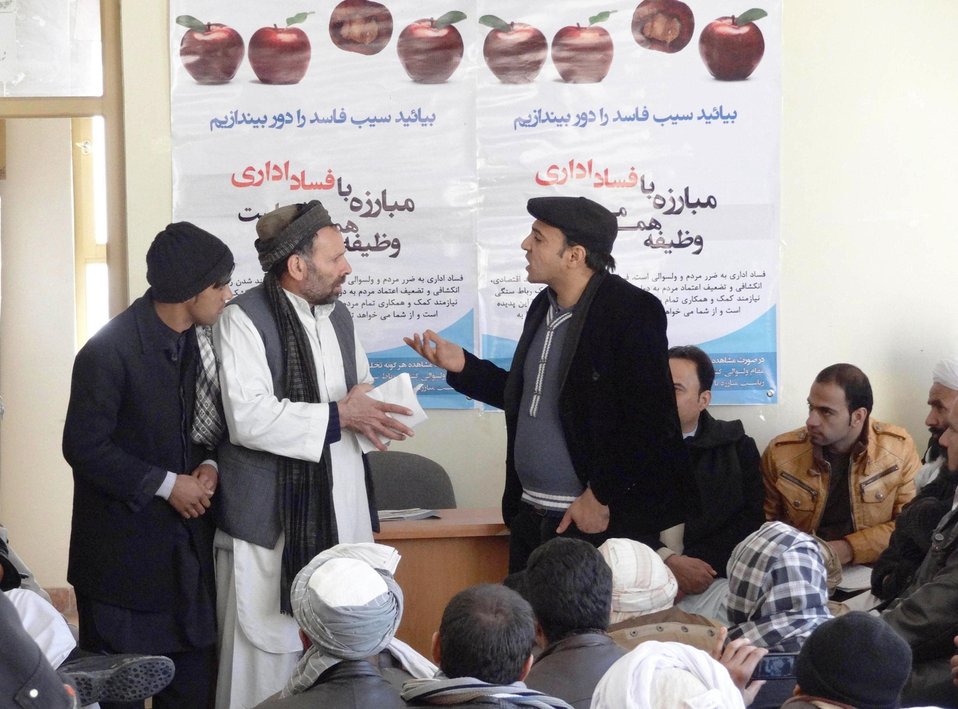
The Kushk Rabat-e Sangi District Governor with support of the Herat Theater office organized an anti-corruption drama on February 9th.